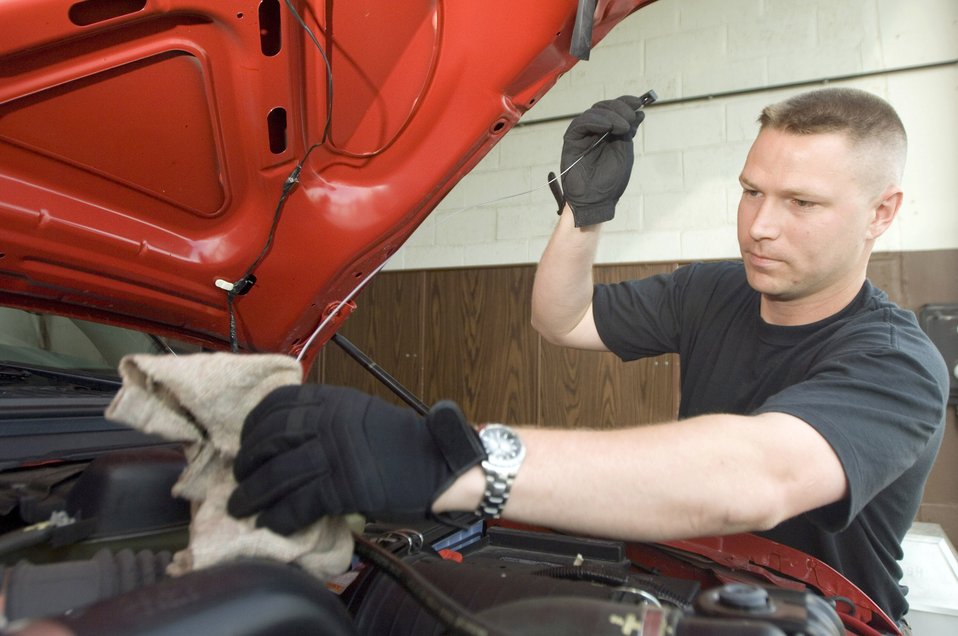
Airmen support Belgium tenant unit

Staff Sgt. Jed Moss ensures an emergency vehicle is ready to respond at the fire station on Chievres Air Base, Belgium. Sergeant Moss is with the 309th Airlift Squadron.